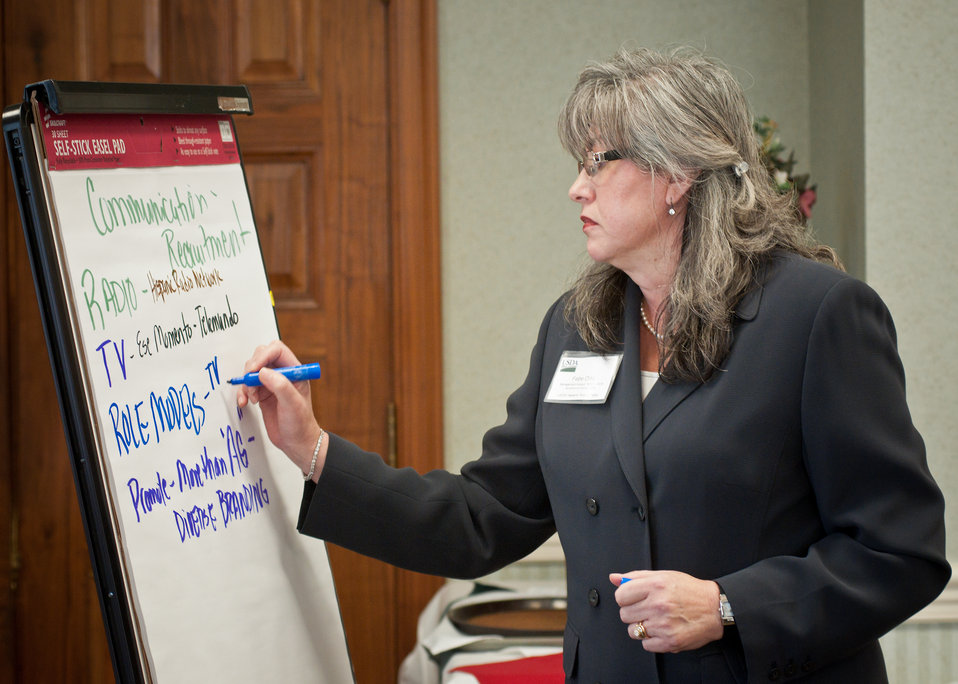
Febe Ortiz, Manangement Analyst, Natural Resources Conservation Service facilitated the United States Department of Agriculture Hispanic Roundtable at the United States Department of Agriculture, Monday, December 5, 2011 in Washington, DC. The roundtable focused on recruitment, retention and employee development for the purpose of developing the USDA Hispanic recruitment Plan. The roundtable hosted several national Hispanic partners and recognized USDA Hispanic organizations and associations.